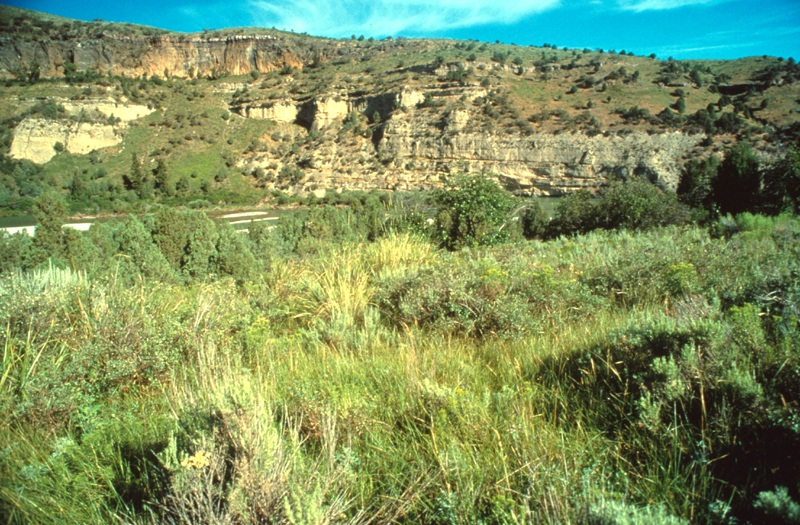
South Fork of the Snake River